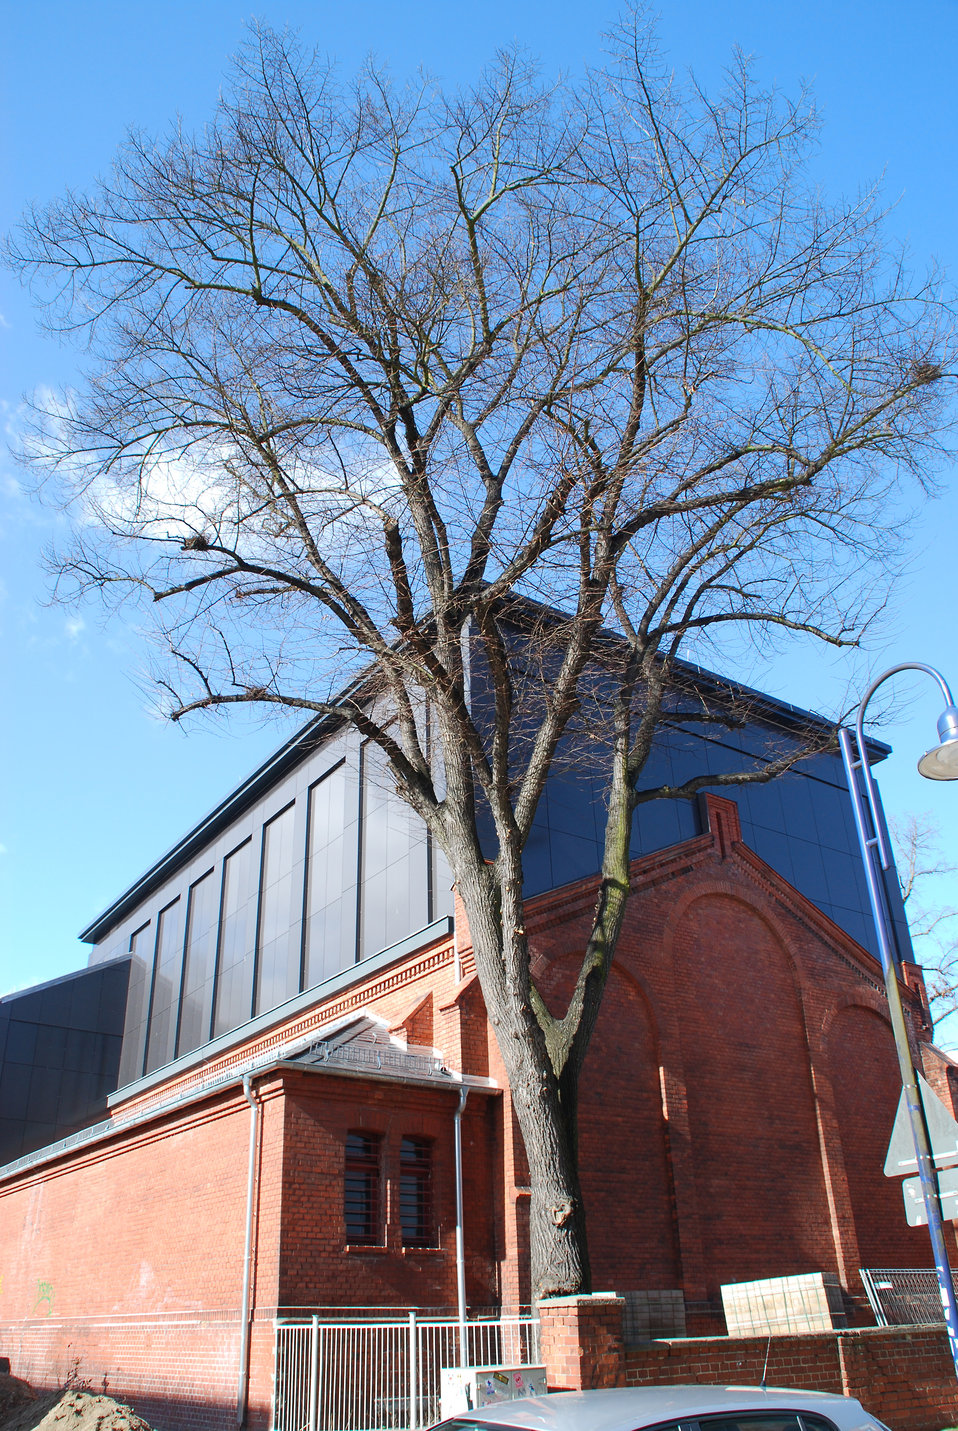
Abriss Bahnhofstunnel Frankfurt (Oder) Ehemaliges Friedrichsgymnasium Turnhalle um ein Stockwerk aufgestockt